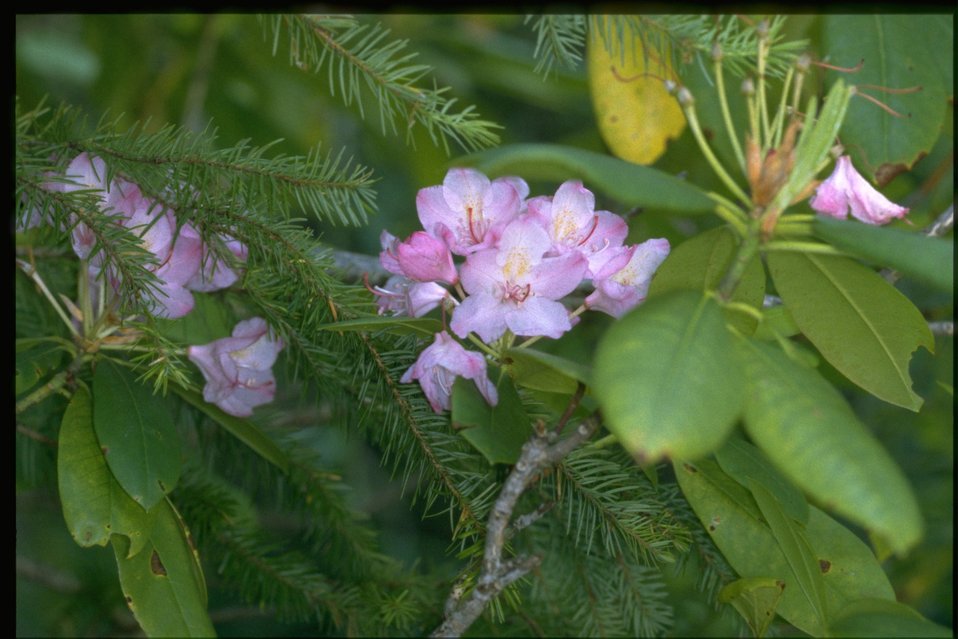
Medium shot of Rhododendron macrophyllum.